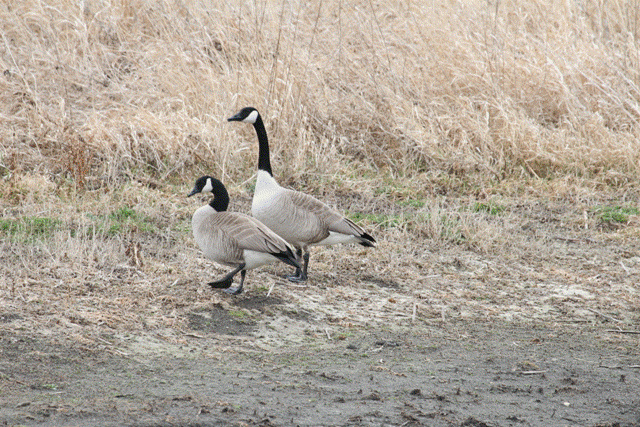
Canada Geese Pair